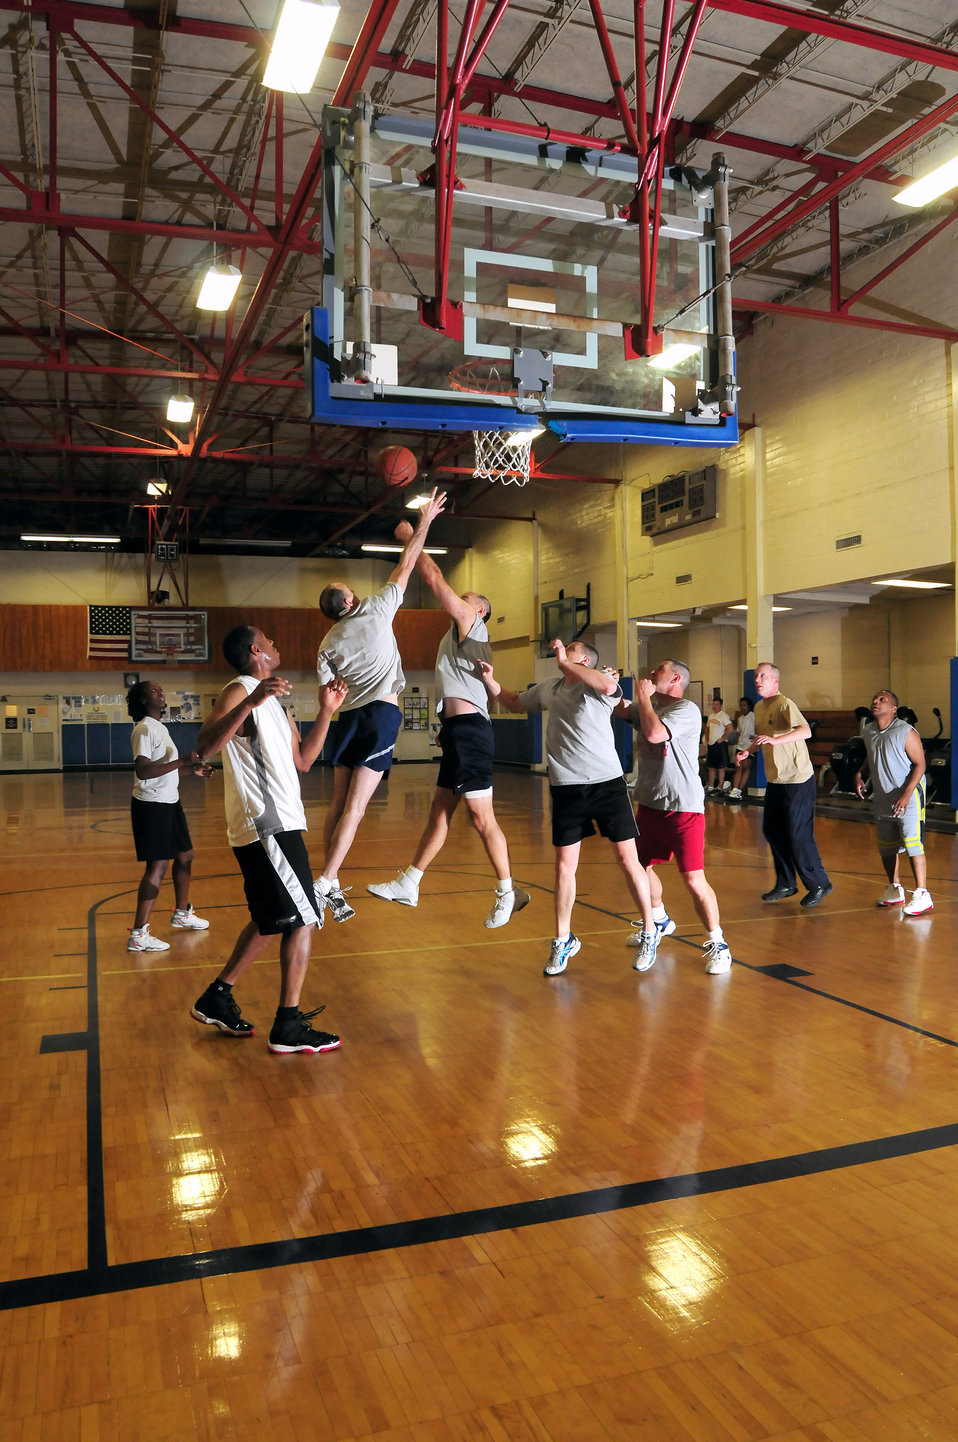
Chief McKinley 'schools' Senior NCO Academy instructors

Instructors from the Senior NCO Academy at Maxwell Air Force Base's Gunter Annex play a game of basketball against Chief Master Sgt. of the Air Force Rodney J. McKinley and other chief master sergeants Feb. 25 at Maxwell Air Force Base's Gunter Annex in Alabama. Chief McKinley's team defeated the Senior NCO Academy instructors in the early-morning game.